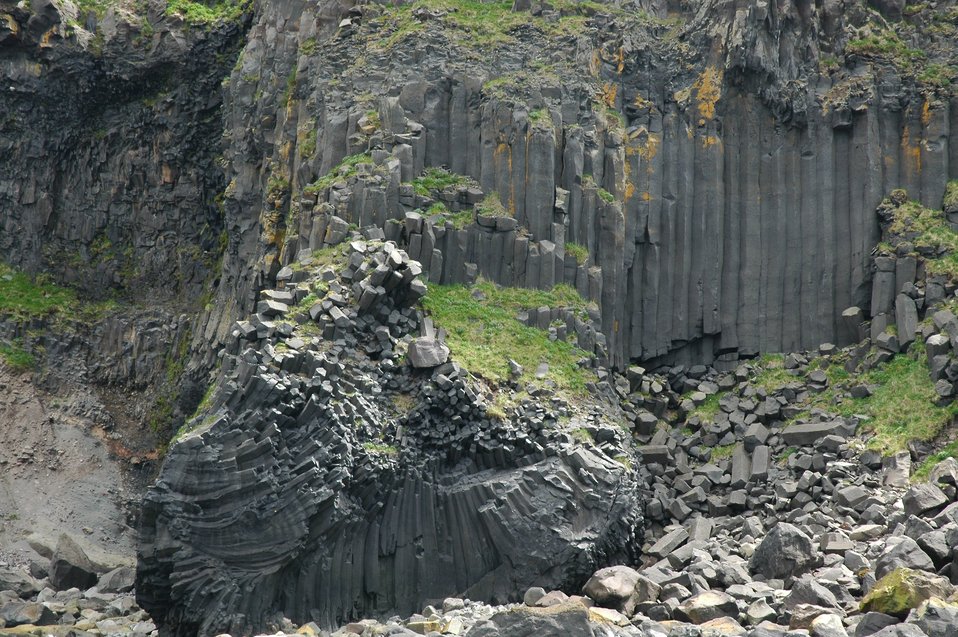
Spectacular outcropping of columnar basalt at Driftwood Bay